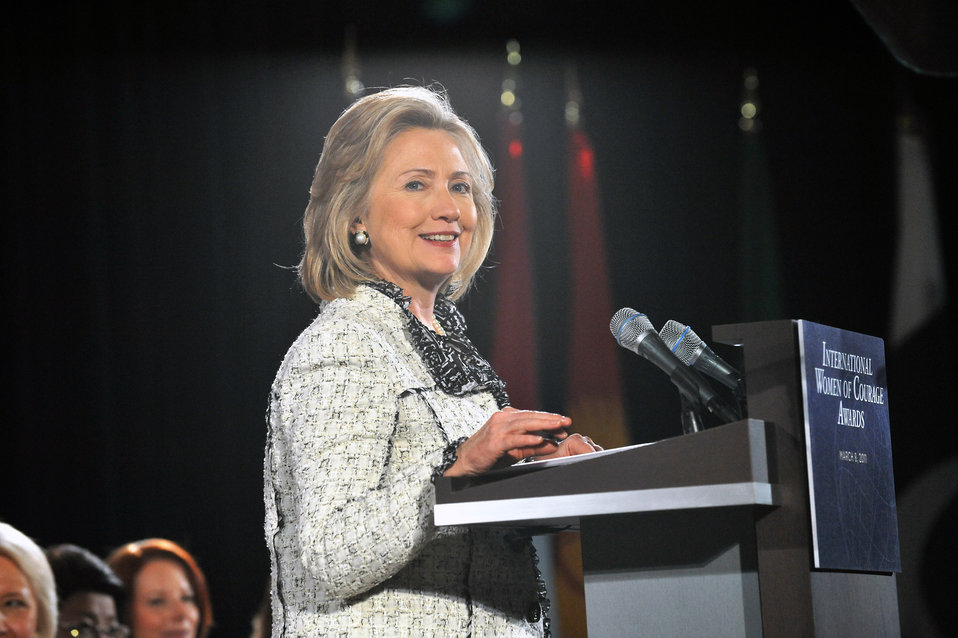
Secretary Clinton Delivers Remarks at 2011 International Women of Courage Awards Ceremony

U.S. Secretary of State Hillary Rodham Clinton, center right, and First Lady of the United States Michelle Obama, center left, pose for a photo with the honorees of the 2011 International Women of Courage Awards at the U.S. Department of State in Washington, D.C., on March 8, 2011.